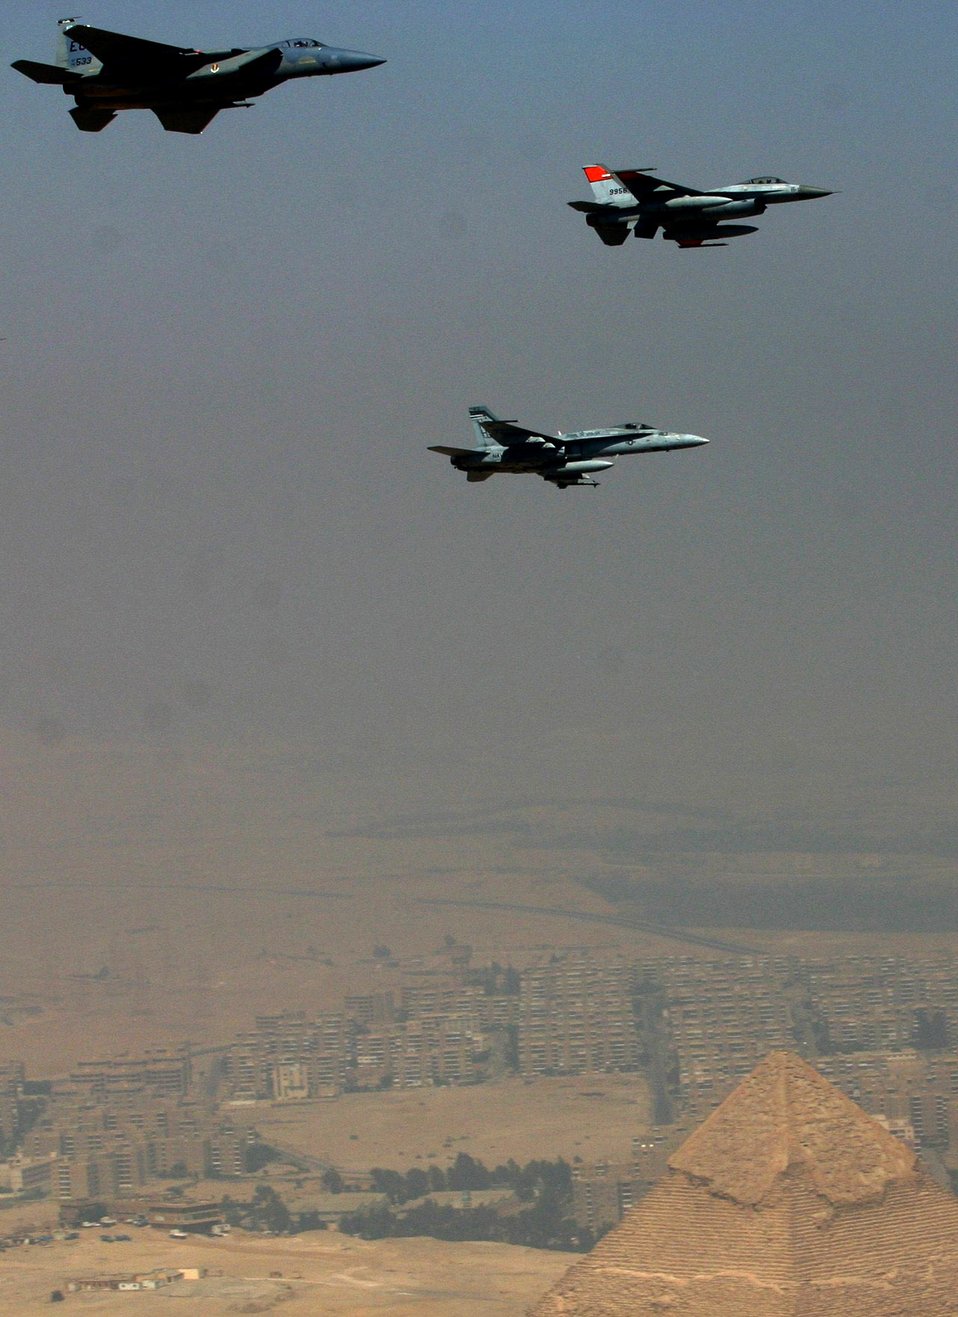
Bright Star

ABOVE EGYPT -- A 58th Fighter Squadron F-15 Eagle (left), a Navy F/A-18 Hornet (bottom) and an Egyptian F-16 fly past Egypt's pyramids at Giza. The Sept. 15 flight was part Bright Star 05/06, a joint-combined training exercise.